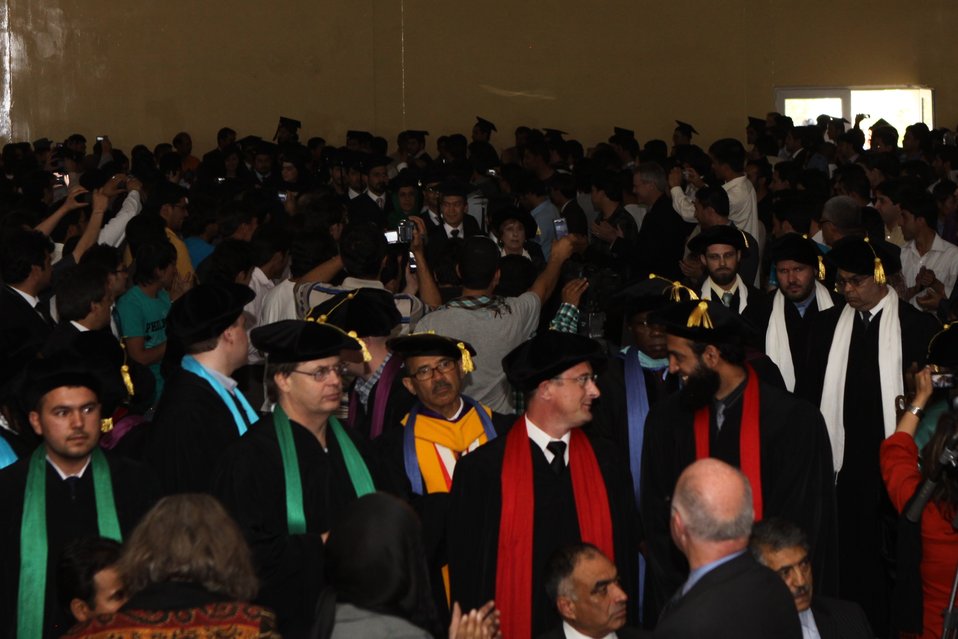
100526 AUAF Graduation 130